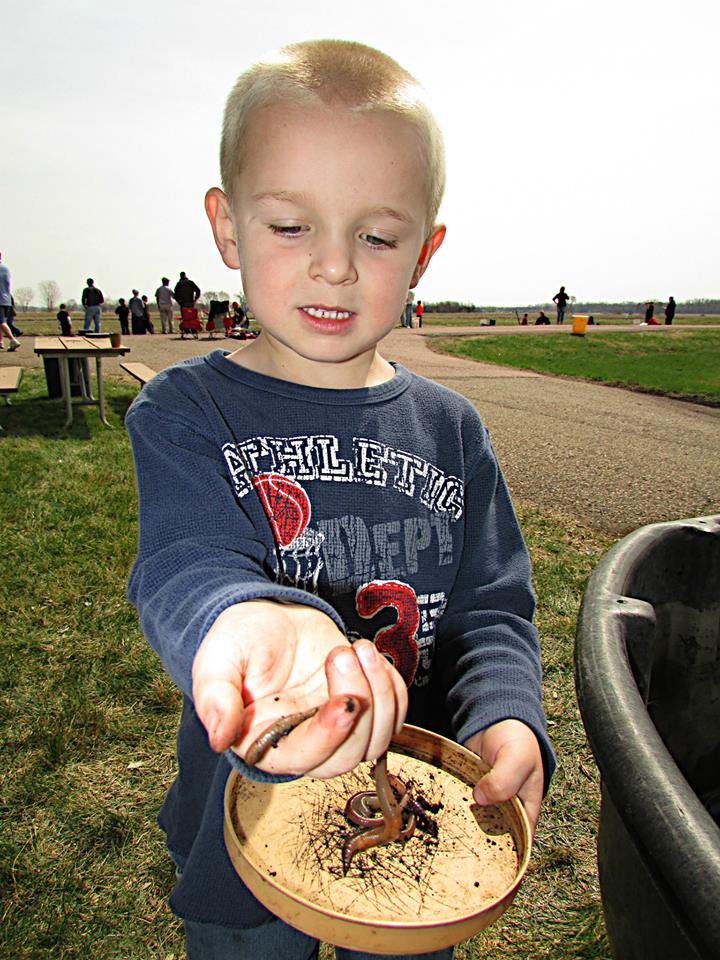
'These are cool.'

It was a successful day.